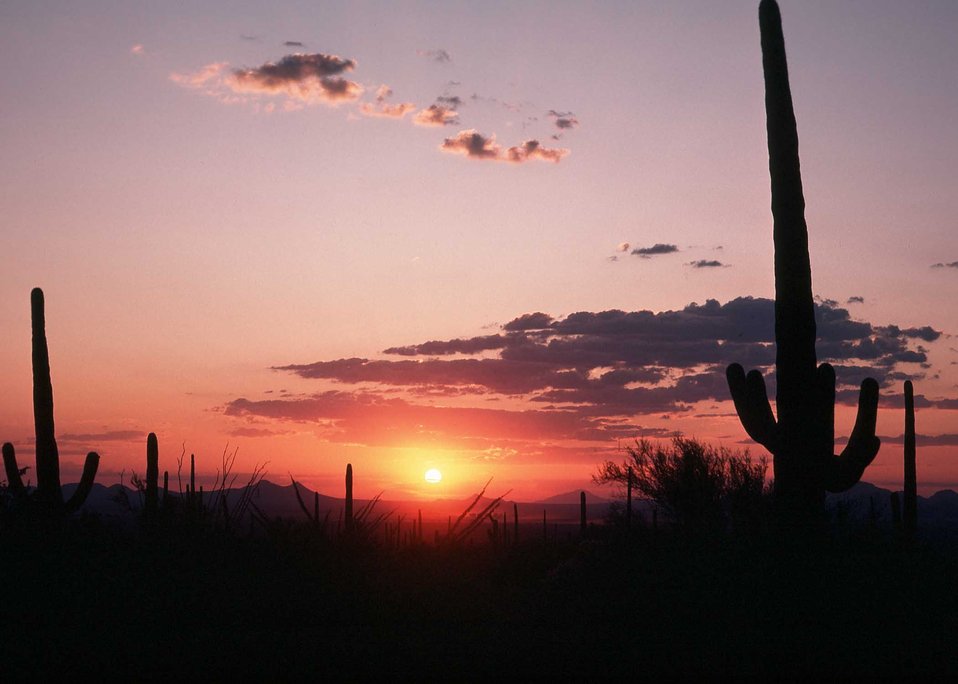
Sunset over the desert

A beautiful sun sets over the desert near Tuscon, AZ.